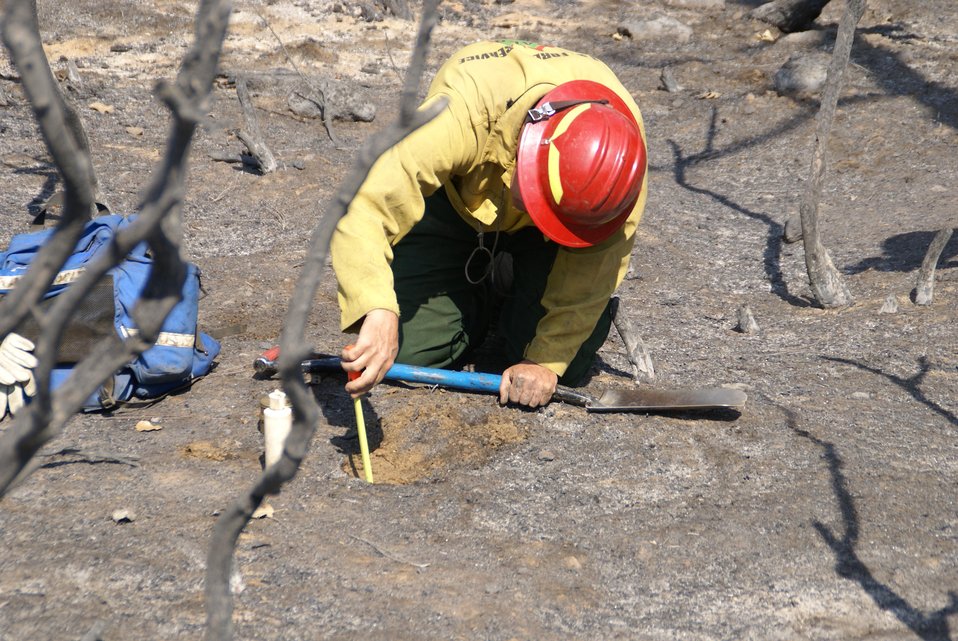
Burned Area Emergency Response (BAER) soil scientist measures the depth the soil has been burned on the Rim Fire. BAER teams start work even before the fire is completely extinguished at the Rim Fire. BAER is a rapid assessment of burned watersheds by a BAER team to identify imminent post-wildfire threats to human life and safety property and critical natural or cultural resources on National Forest System lands and take immediate actions to implement emergency stabilization measures before the first major storms. Fires result in loss of vegetation exposure of soil to erosion and increased water runoff that may lead to flooding increased sediment debris flows and damage to critical natural and cultural resources. BAER team members implement seeding and mulching installation to prevent erosion, erect temporary water run-off control structures that will protect recovering areas, and installation of warning signs, replace safety related facilities, remove safety hazards, prevent permanent loss of habitat for threatened and endangered species, and prevent the spread of noxious weeds and protect critical cultural resources. The Rim Fire in the Stanislaus National Forest near in California began on Aug. 17, 2013 and is under investigation. The fire has consumed approximately 256,169 acres and is 84% contained.